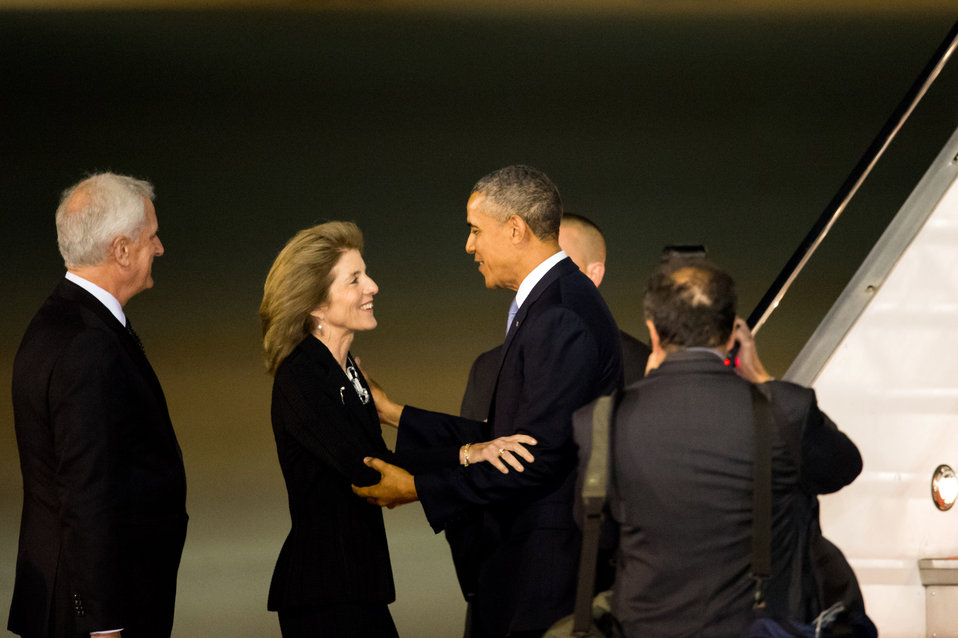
President Obama Welcomed by Ambassador Kennedy

U.S. President Barack Obama arrives at Tokyo International Airport and is welcomed by U.S. Ambassador to Japan Caroline Kennedy upon arrival to Japan on April 23, 2014.